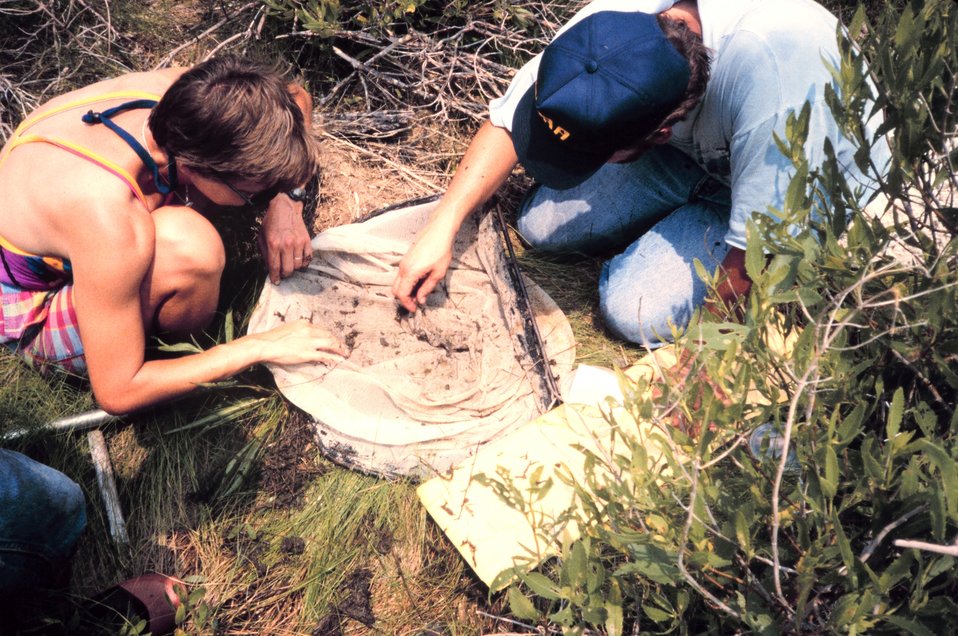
Examining the catch from a net sample taken at high marsh tide pools.